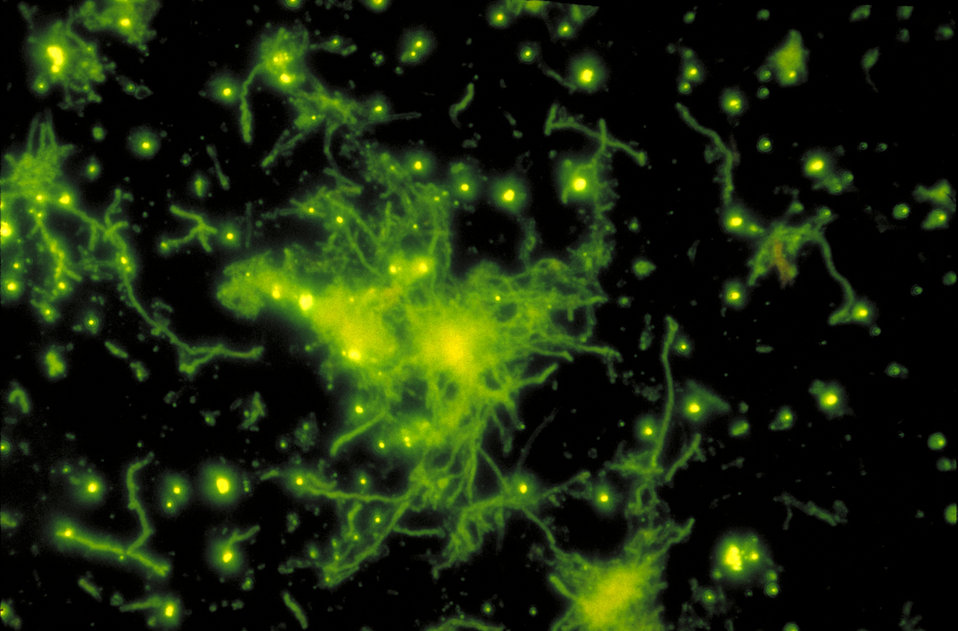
A photomicrograph of Actinomyces naeslundii using Direct FA staining technique.